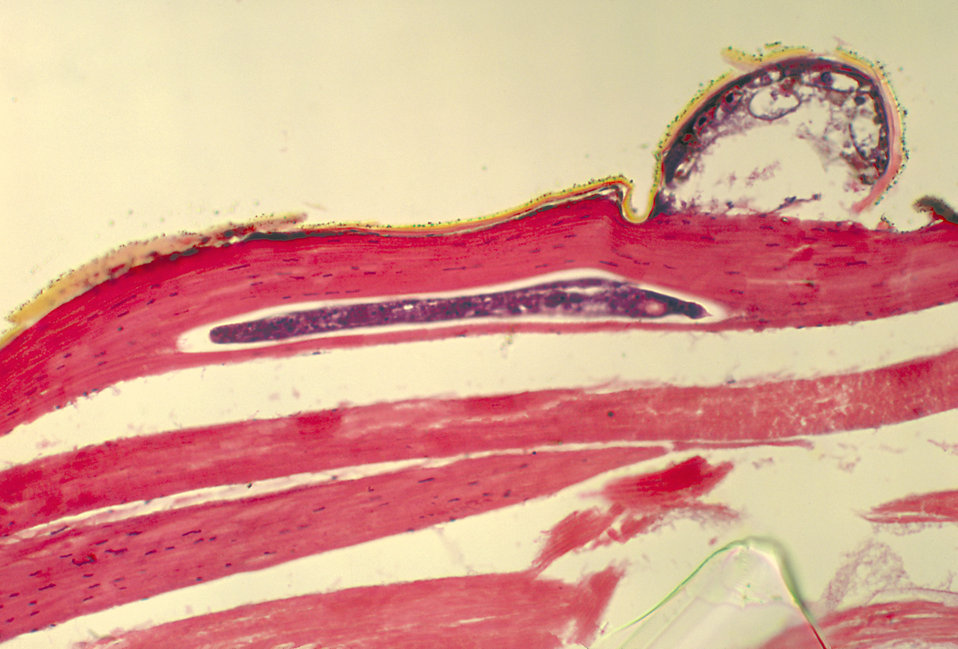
A photomicrograph revealing the histology of Onchocerca volvulus developing in a Black Fly, Simulium ochraceum.